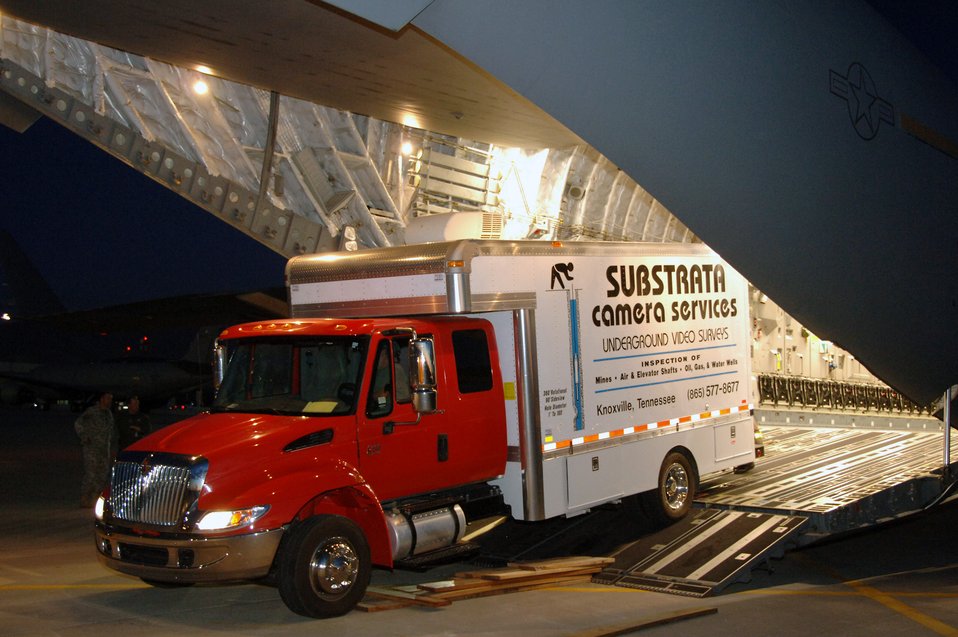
Air National Guard assists with Utah mining rescue

Airmen from the 151st Air Refueling Wing in Salt Lake City assist in the arrival of a C-17 Globemaster III from the Mississippi Air National Guard's 172nd Airlift Wing Aug. 9. The C-17 transported equipment used by Substrata Camera Services of Knoxville, Tenn., from its location in Topeka, Kan., to assist in rescue operations for six stranded Utah miners. The equipment will allow rescuers the ability to position a camera in the mine and assess the situation from a 360-degree angle. It will allow rescue crews to have a better idea of conditions inside the collasped mine.